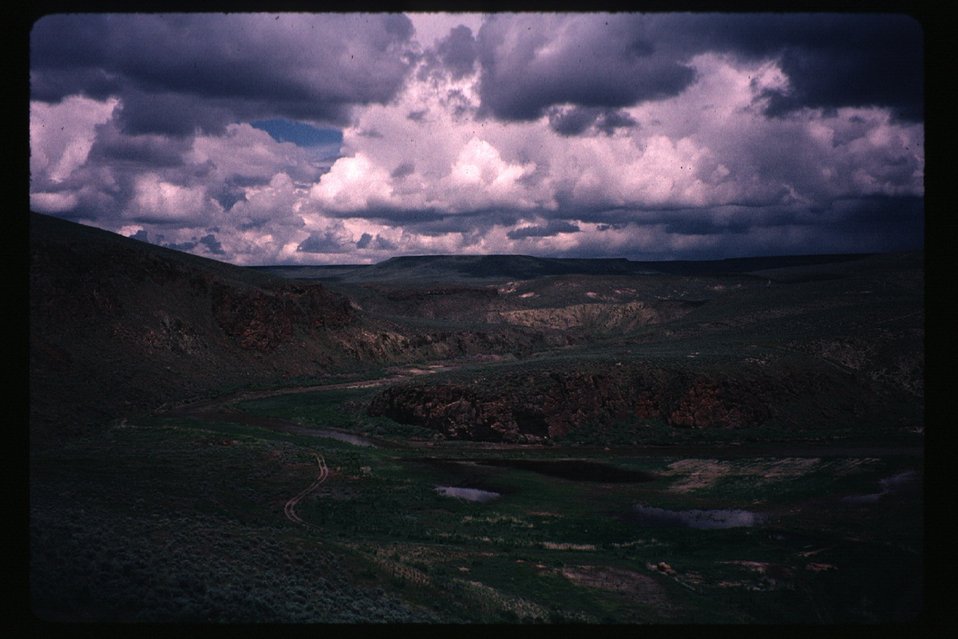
River Rangeland Four Rivers Field Office LSRD Lower Snake River District